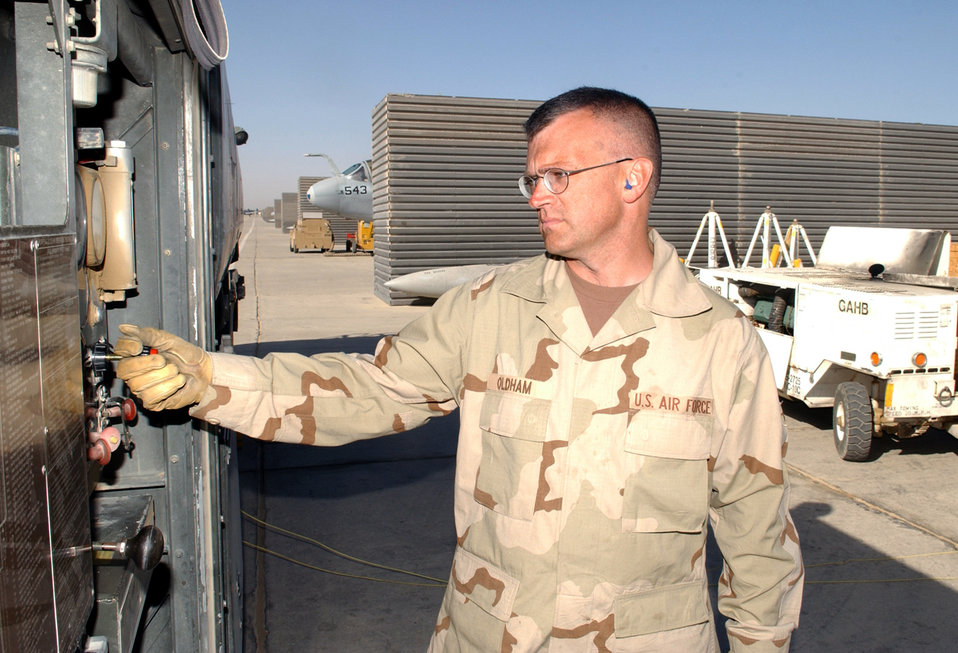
Keeping aircraft fueled to fight

BAGRAM AIR BASE, Afghanistan -- Airman 1st Class John Oldham starts fuel coursing through his refueling hose to a waiting aircraft. Airman Oldham is a 455th Expeditionary Logistics Readiness Squadron petroleum, oil and lubricants journeyman.